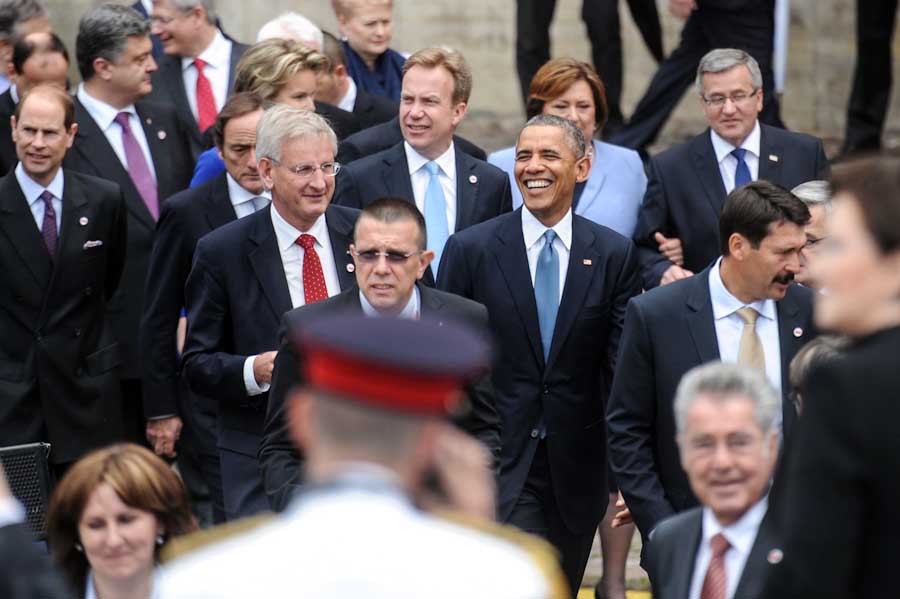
President Obama and Swedish Foreign Minister Bildt Participate in Celebration Marking 25th Anniversary of Freedom

U.S. President Barack Obama and Swedish Foreign Minister Carl Bildt participate in a celebration marking the 25th anniversary of first partly free elections that led to the fall of communism at the Zamkowy (Castle) Square in Warsaw, Poland, on June 4, 2014. [U.S. Mission to Poland photo by Jakub Szymczuk]